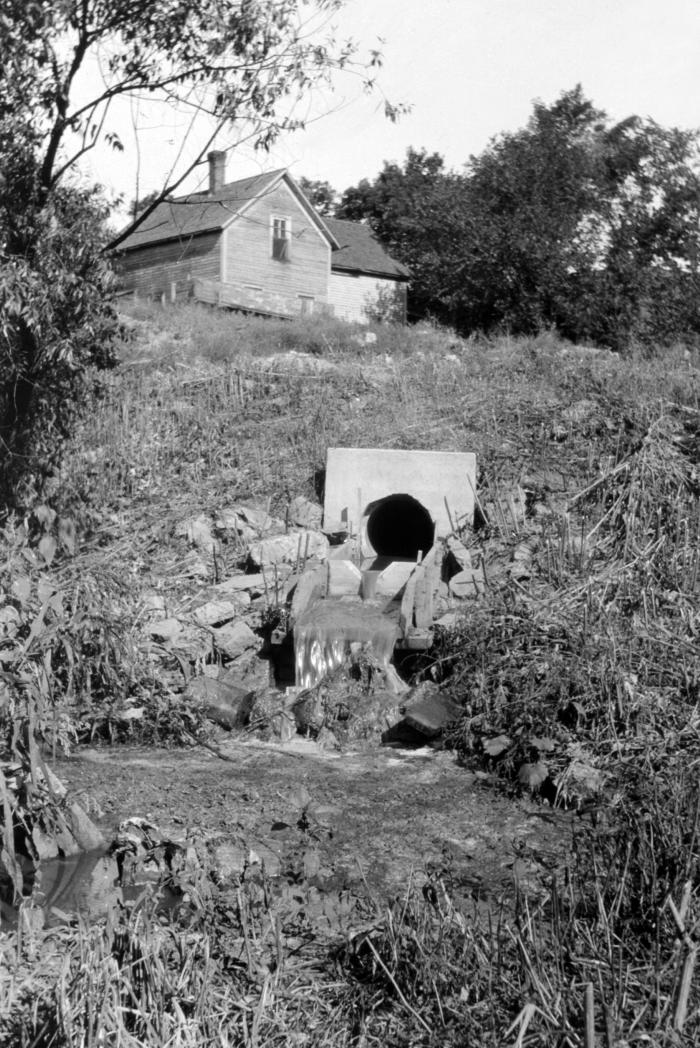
This historic August, 1932 photograph depicted a sewer outlet on the banks of the Red River at First Street in Fargo, North Dakota. Raw sewage could be seen gushing from the end of the sewer pipe. The image was taken during the Red River water quality survey of 1931-1933.